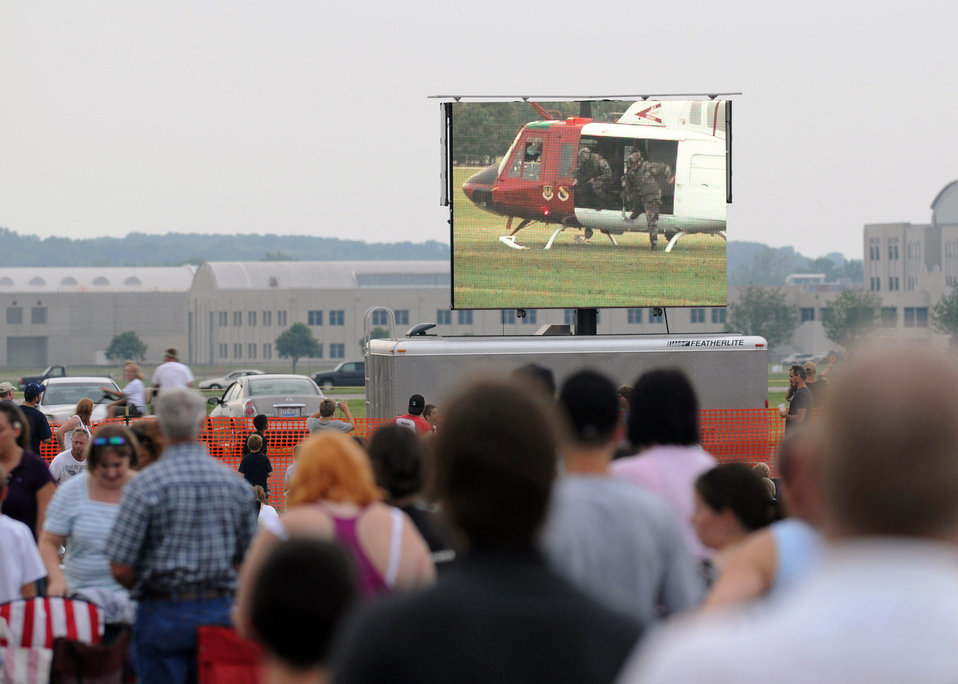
Freedom call

A crowd watches as a UH-1 Huey performs a mission scenario during the 4th annual Freedom's Call Tattoo June 27 on the grounds of the National Museum of the U.S. Air Force in Dayton, Ohio. More than 75,000 peole came out for the event that consisted of aircraft fly overs, food and music by the Air Force Band of Flight, Charlie Daniels Band and local performers. The UH-1 is from Eglin Air Force Base, Fla.